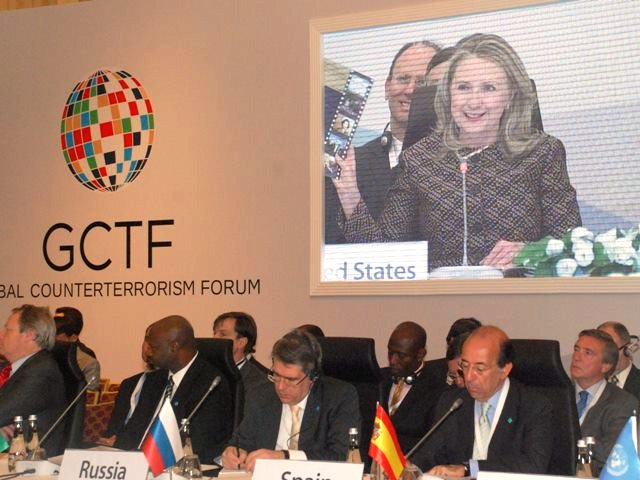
Secretary Clinton Delivers Remarks at Global Counterterrorism Forum

U.S. Secretary of State Hillary Rodham Clinton delivers remarks at the Global Counterterrorism Forum in Istanbul, Turkey, on June 7, 2012.